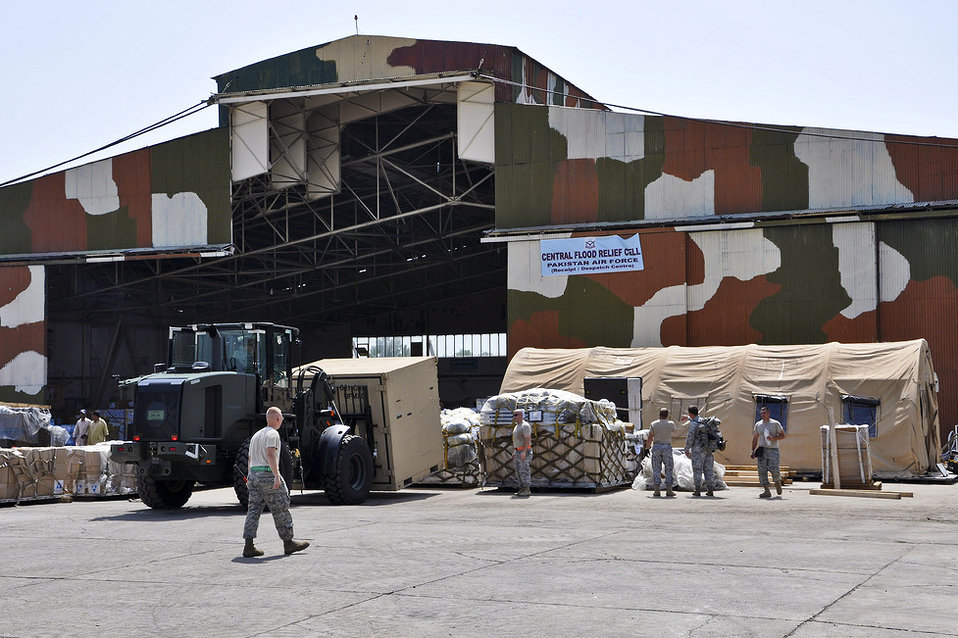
Pakistani relief

Airmen from the 621st Contingency Response Wing place equipment and prepare to establish operations with the Pakistan air force's central flood relief cell in Rawalpindi, Pakistan, Aug. 29, 2010. About 40 airmen assigned to the 621st CRW are working with Pakistani officials to support humanitarian airlift operations and deliver relief supplies to locations throughout Pakistan.